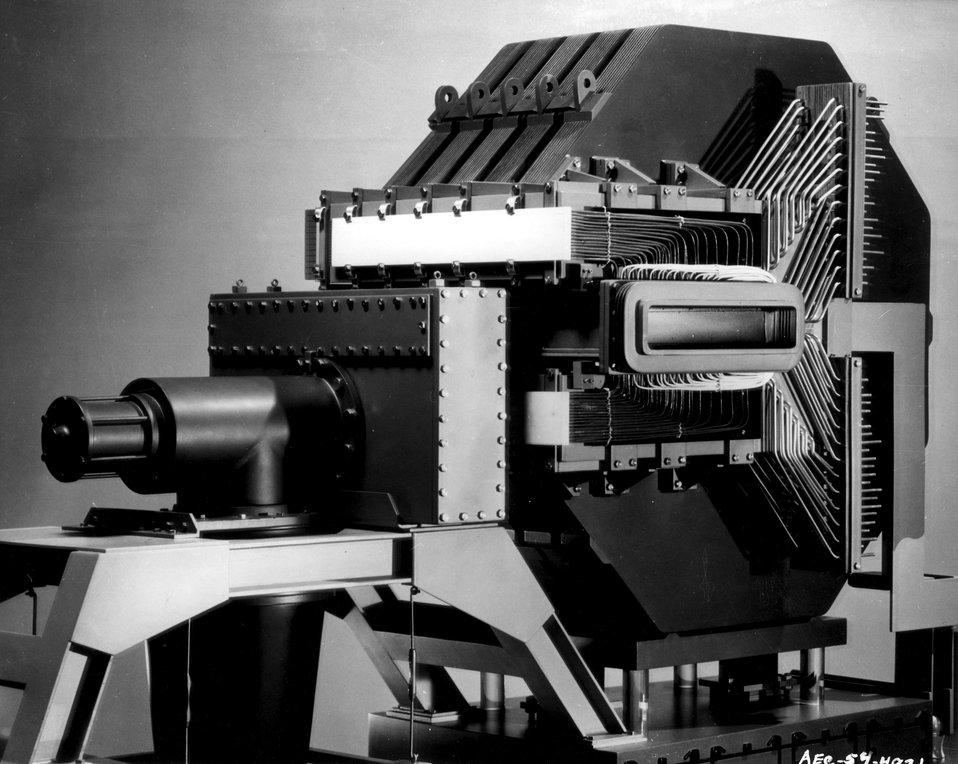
Quarter-scale model of a cross-section of the Cosmotron at Brookhaven National
Laboratory, Upton, New York.